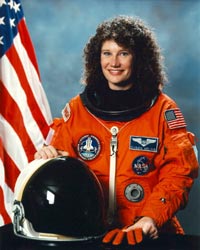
Colonel Susan Helms

1990's -- Col. Susan Helms, first U.S. military woman in space.